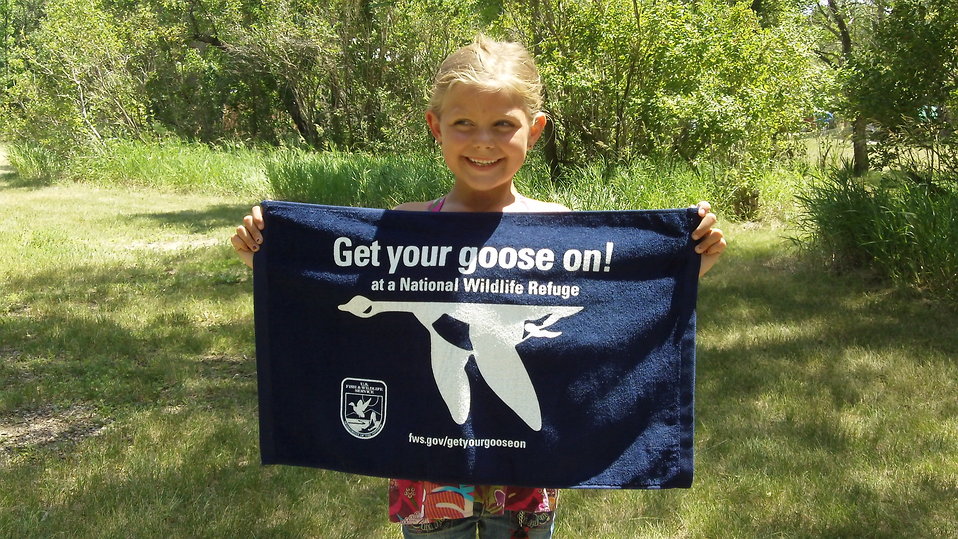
Get Your Goose On!

Photo taken at Huron Wetland Management District in east-central South Dakota.